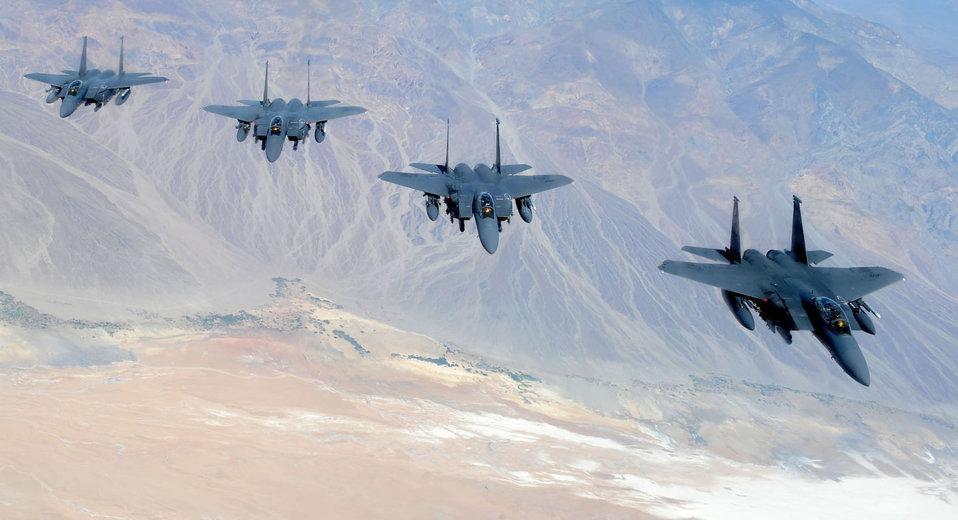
Eagles of a feather

Four F-15E Strike Eagles fly in formation above the Nevada Test and Training Range June 21, 2011, during Green Flag-West.